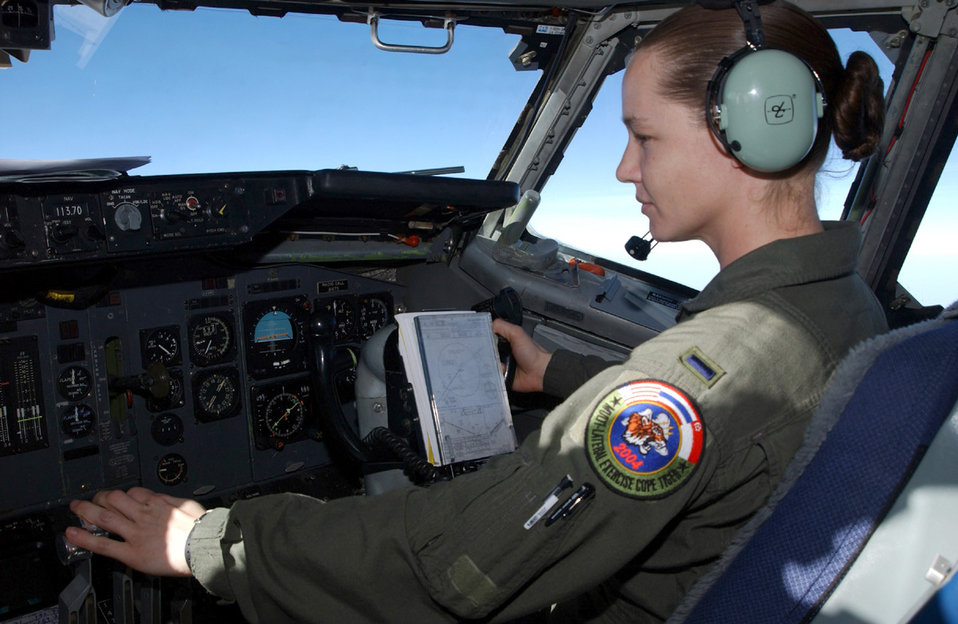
Controlling the sky

KORAT ROYAL THAI AIR FORCE BASE, Thailand -- First Lt. Kimberly Krohmer, E-3 Sentry co-pilot, prepares for an aerial refueling during a Cope Tiger '04 exercise mission. Airborne Warning and Control System aircrews are flying up to 10-hour missions to control the sky during the annual joint/combined multilateral exercise here. Lieutenant Krohmer is assigned to the 962nd Airborne Air Control Squadron at Elmendorf Air Force Base, Alaska.